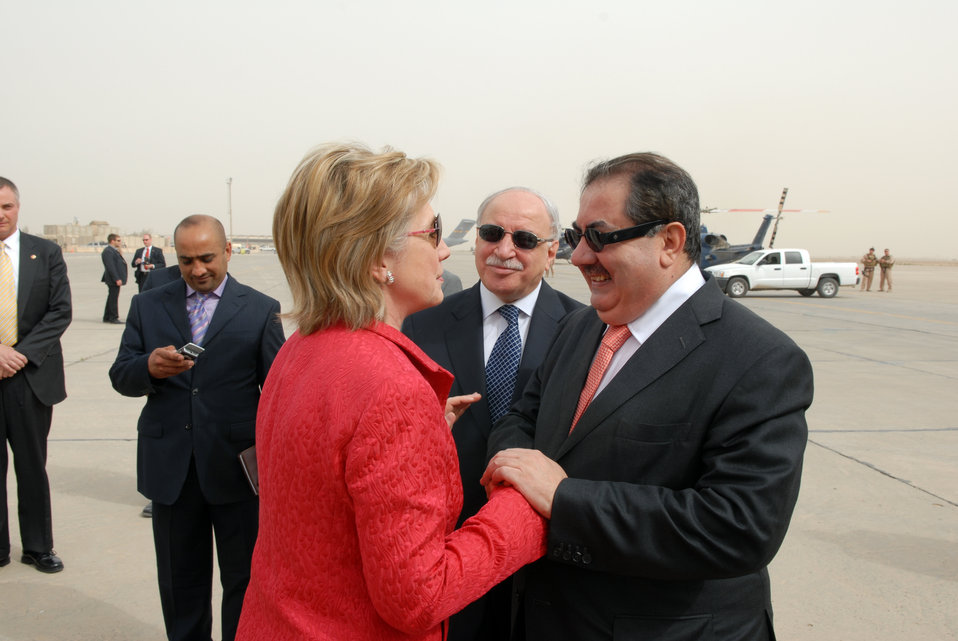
Secretary Clinton Arrives in Baghdad

Upon her arrival in Baghdad, Iraq on April 25, 2009, U.S. Secretary of State Hillary Rodham Clinton is greeted by Iraq’s Minister of Foreign Affairs Hoshyar Zebari.